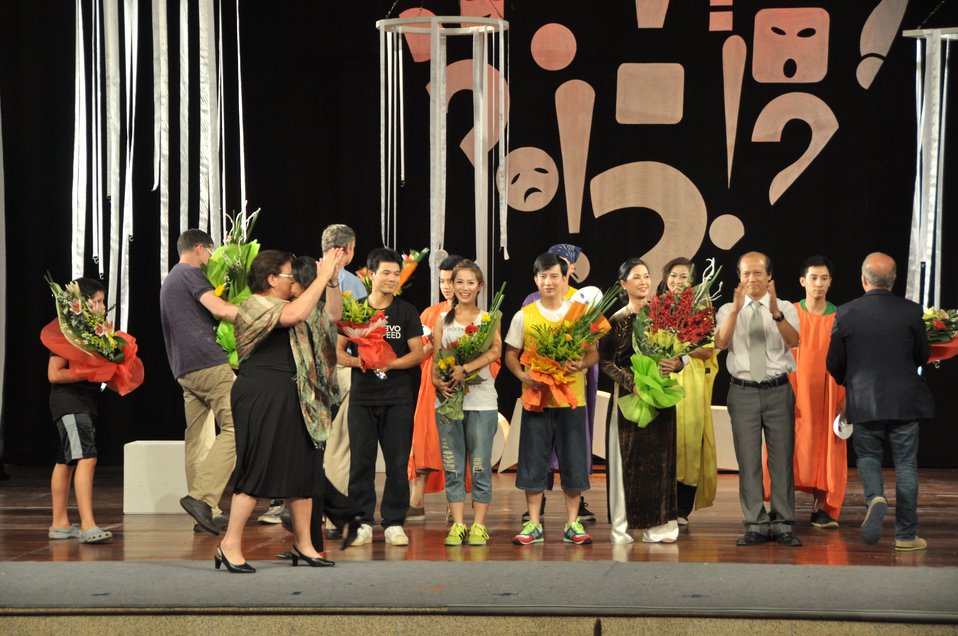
PEPFAR Musical Questions and Exclamations